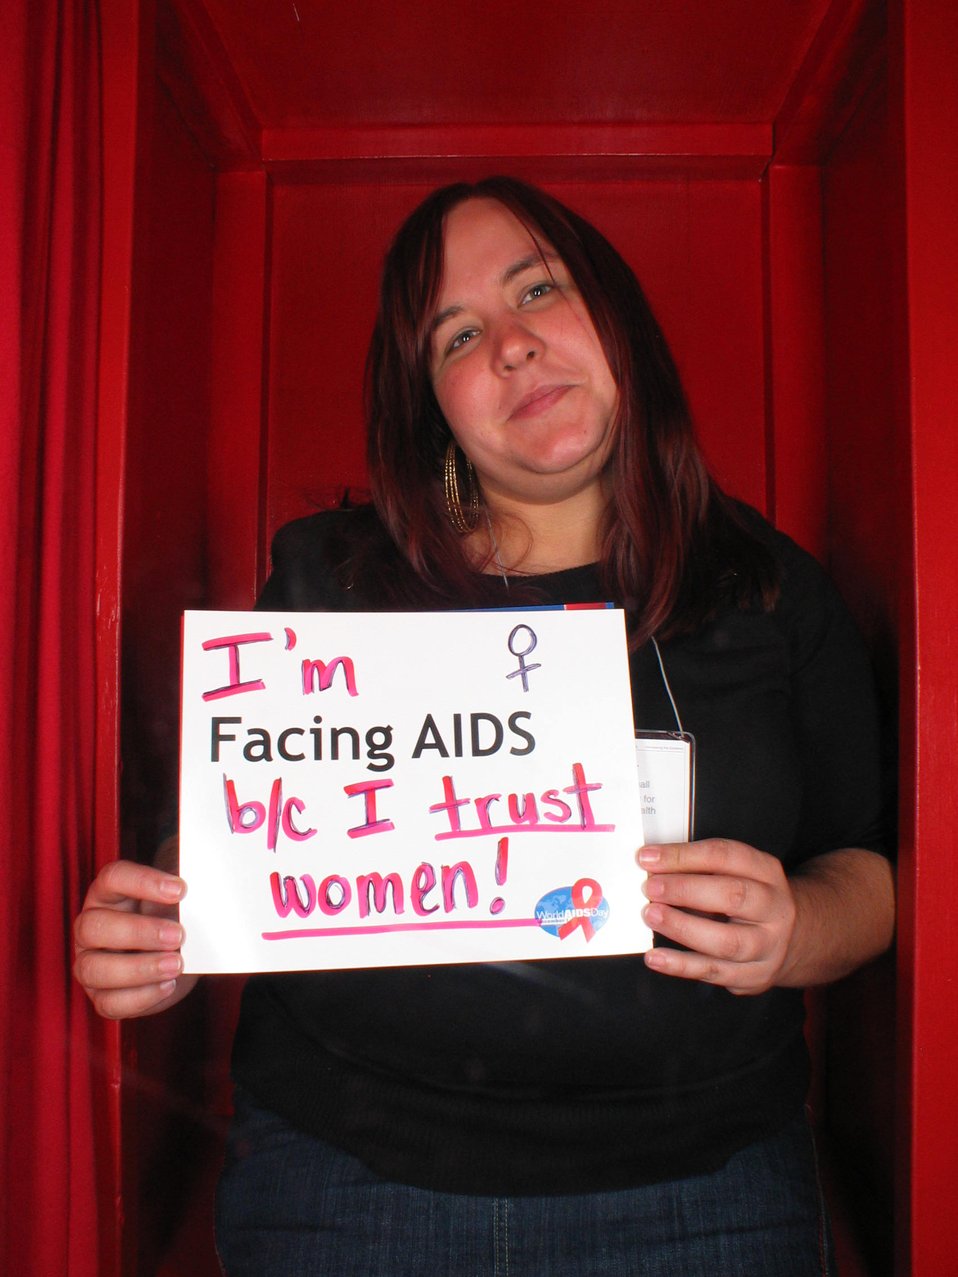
I'm Facing AIDS because I trust women!